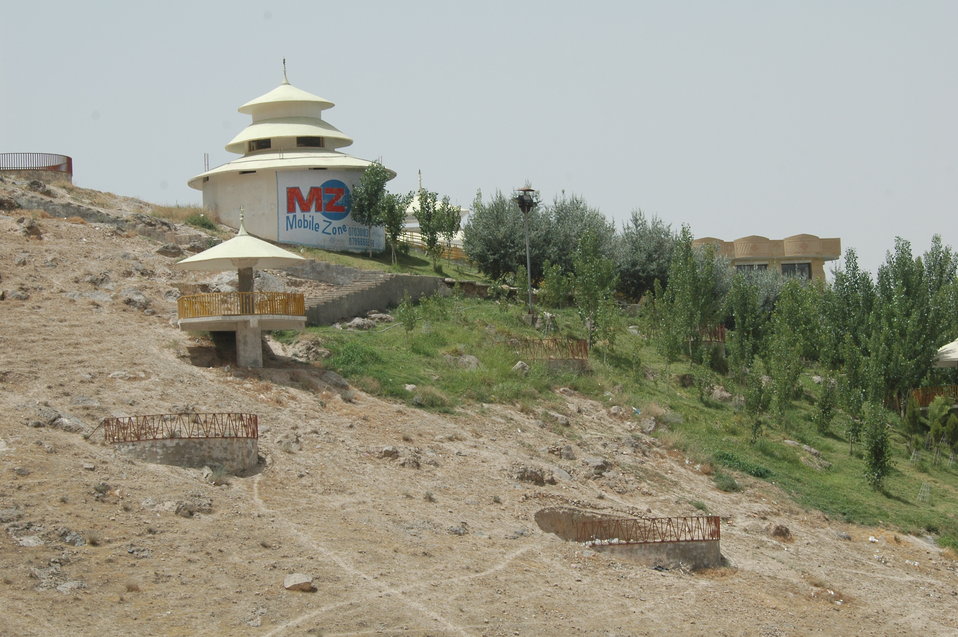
CODEL Berman